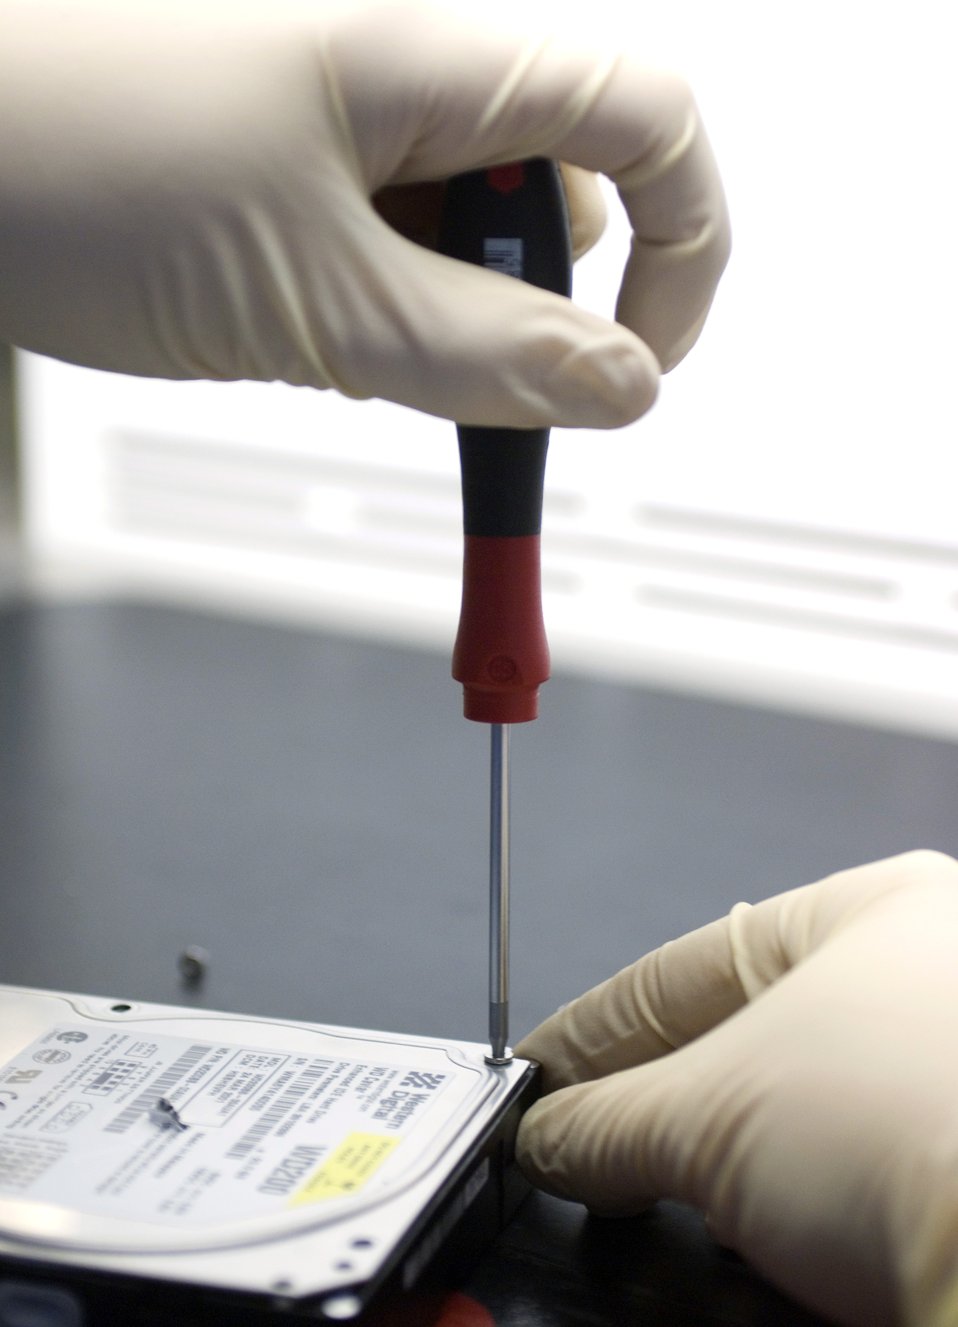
Cyber crime busters

LINTHICUM, Md. (AFPN) -- John Lancaster fixes a computer hard drive so information can be extracted from it at the Defense Computer Cyber Crime Center here Jan. 30. Mr. Lancaster is a senior forensic repair technician.